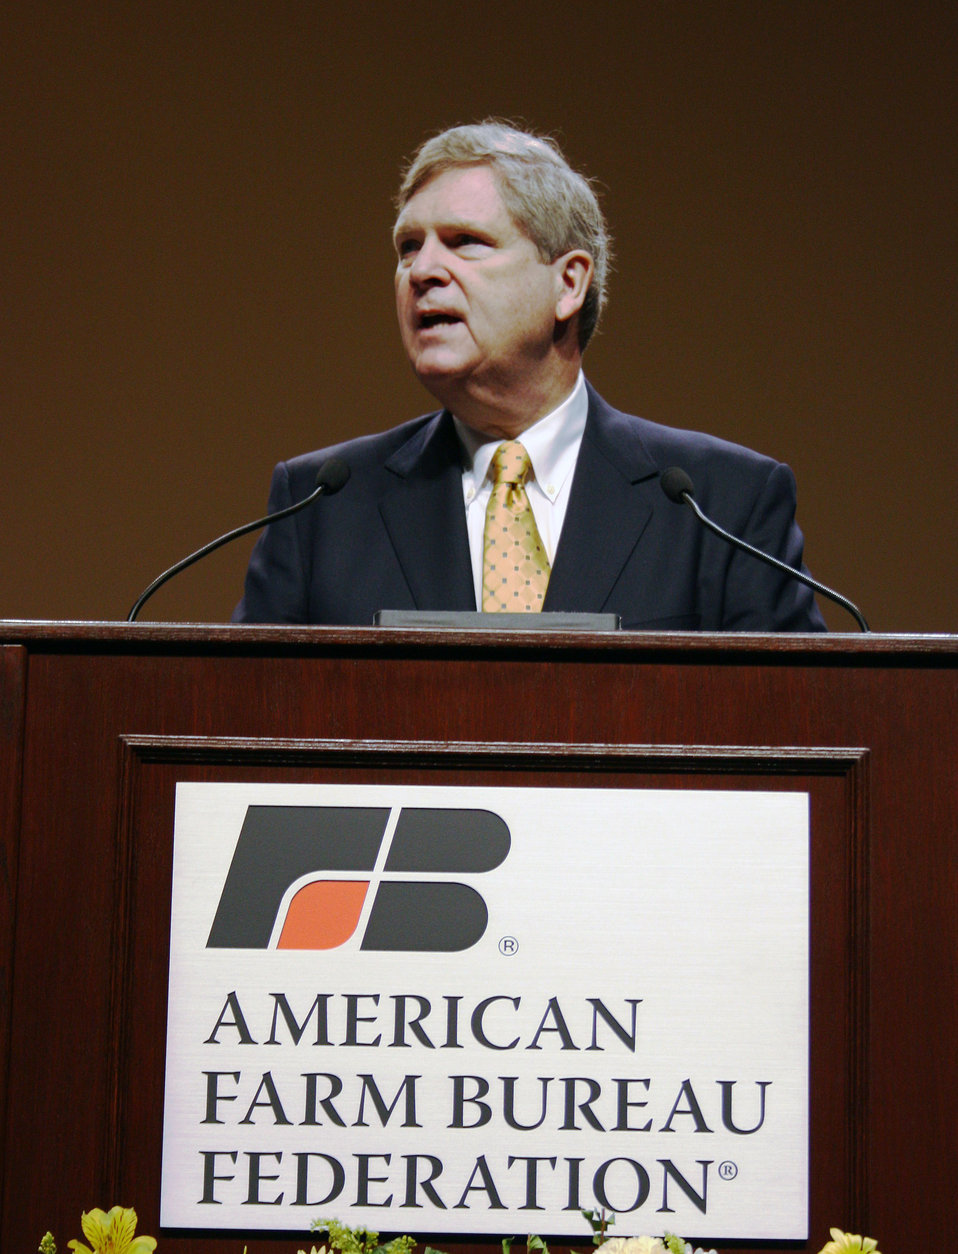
Agriculture Secretary Tom Vilsack speaks to more than 7,000 attendees at the 95th annual American Farm Bureau Federation Convention in San Antonio, TX at the general session on Monday, Jan. 12, 2014.